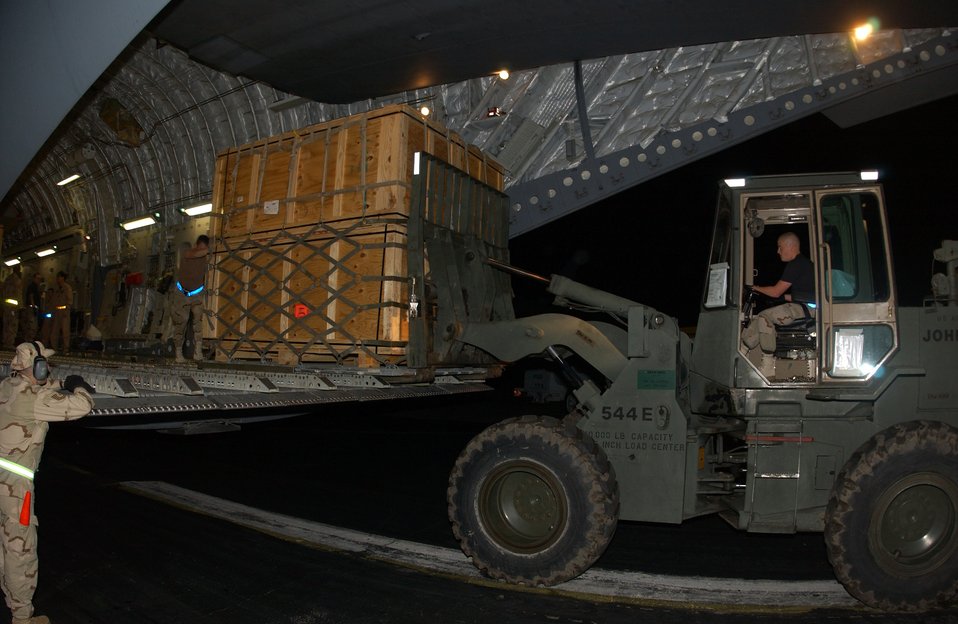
Operation Iraqi Freedom

Islamabad, Pakistan -- Airman unload cargo here as part of the Pakistan earthquake relief effort. The earthquake has killed an estimated 40,000 people and has left thousands more injured in Afganistan, Pakistan, India and the Kashmir region.